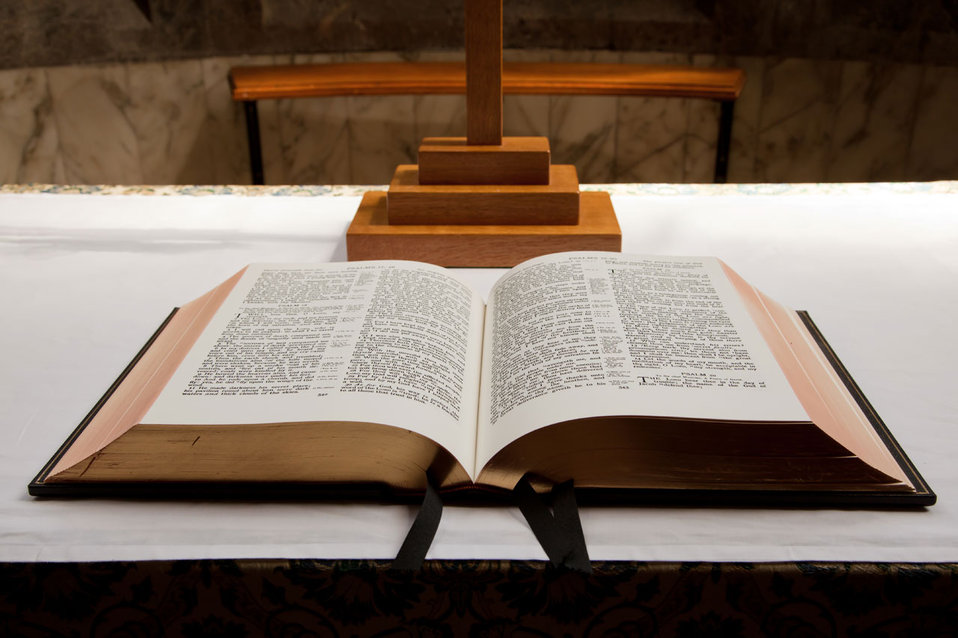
Open bible on the table in the church.